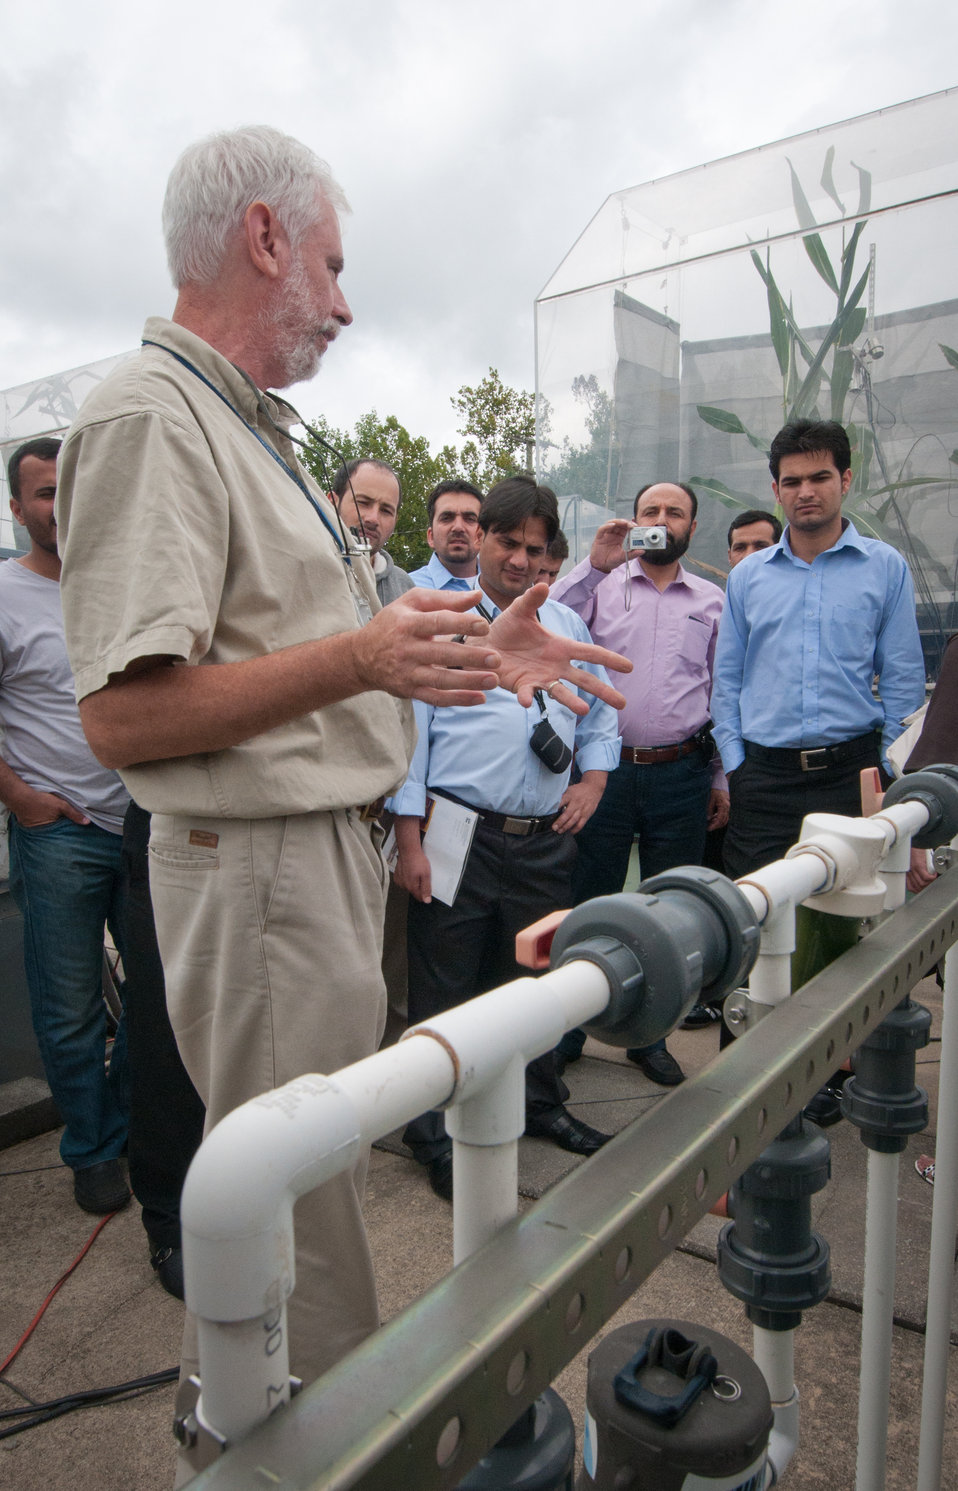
U.S. Department of Agriculture (USDA), Agriculture Research Service's (ARS) Dennis Timlin (left), spoke with 12 Borlaug Fellows from Afghanistan’s Ministry of Agriculture, Irrigation and Livestock (MAIL) about the Global Climate Change Lab at the ARS facility’s Soil Plant Atmosphere Research (SPAR) units in Beltsville, MD, on Wednesday, September 21, 2011. SPAR units provide precise control of the major environmental variables influencing crop growth including temperature, humidity, and atmospheric carbon dioxide concentration. The SPAR units are fully automated to measure crop canopy gas exchange including photosynthesis, respiration, transpiration and water use efficiency.